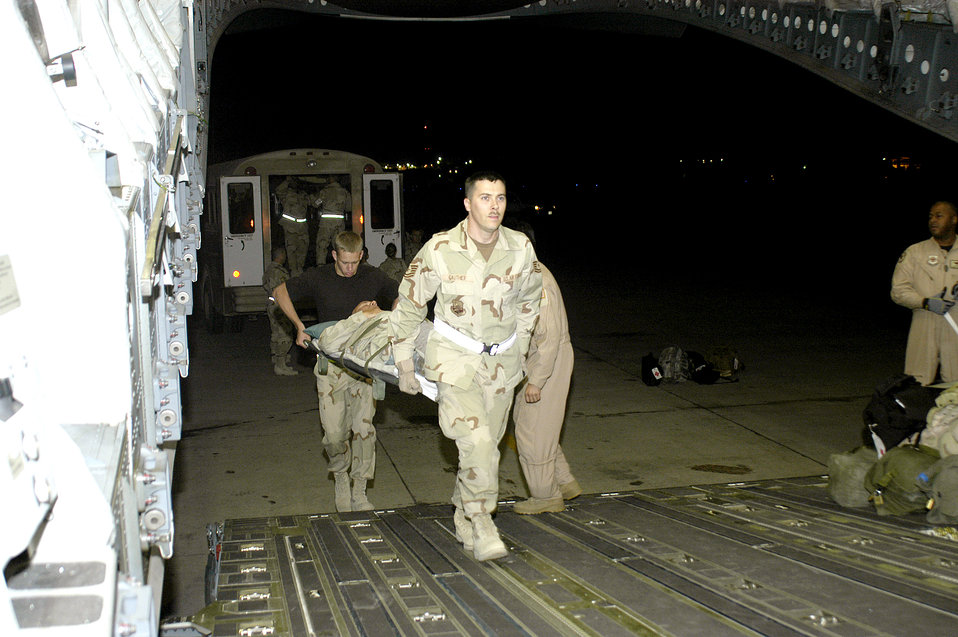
Moving patients

SOUTHWEST ASIA (AFPN) -- Tech. Sgt. Everett Gauthier (front) and Airman 1st Class Jacob Nordwall load a litter patient on a C-17 Globemaster III for transport to Germany. Both are deployed to the 386th Contingency Aeromedical Staging Facility at this desert base.